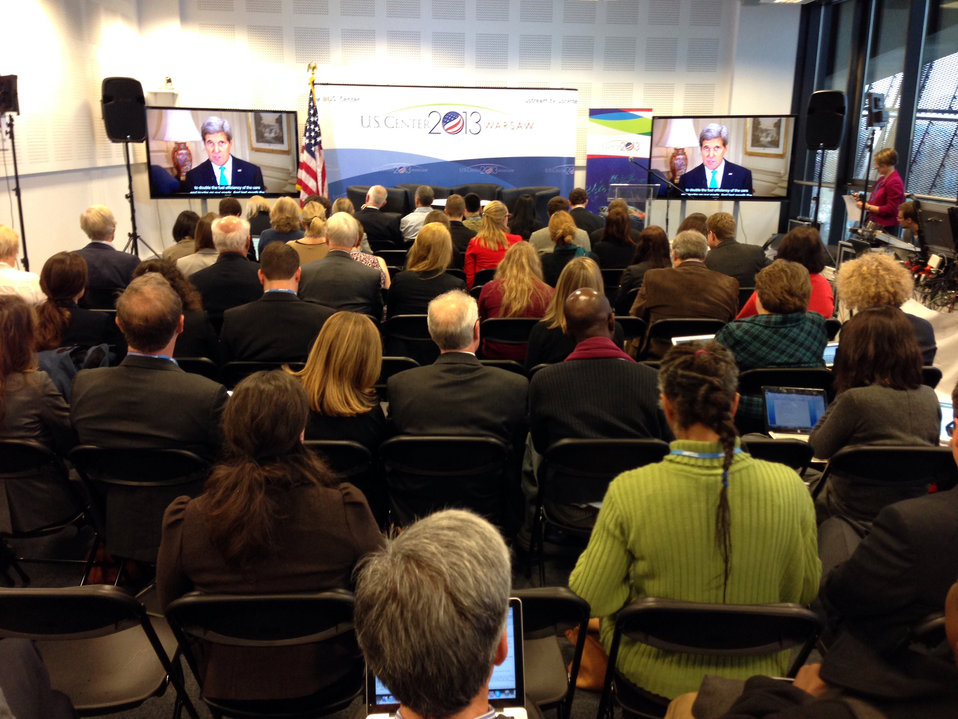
Secretary Kerry Discusses Climate Change

U.S. Secretary of State John Kerry's video message is presented at the U.S. Center at the 19th Session of the Conference of the Parties to the UN Framework Convention on Climate Change (COP19) in Warsaw, Poland, on November 18, 2013. You can view Secretary Kerry's message here: www.youtube.com/watch?v=-Fvk m55ZEg.